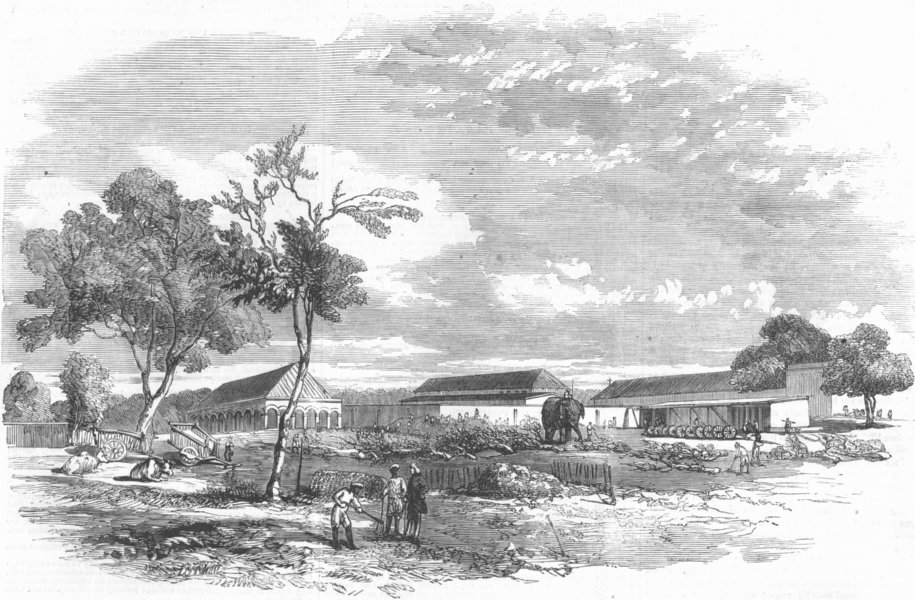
'Defensive Operations at the Artillery Laboratory, Meerut